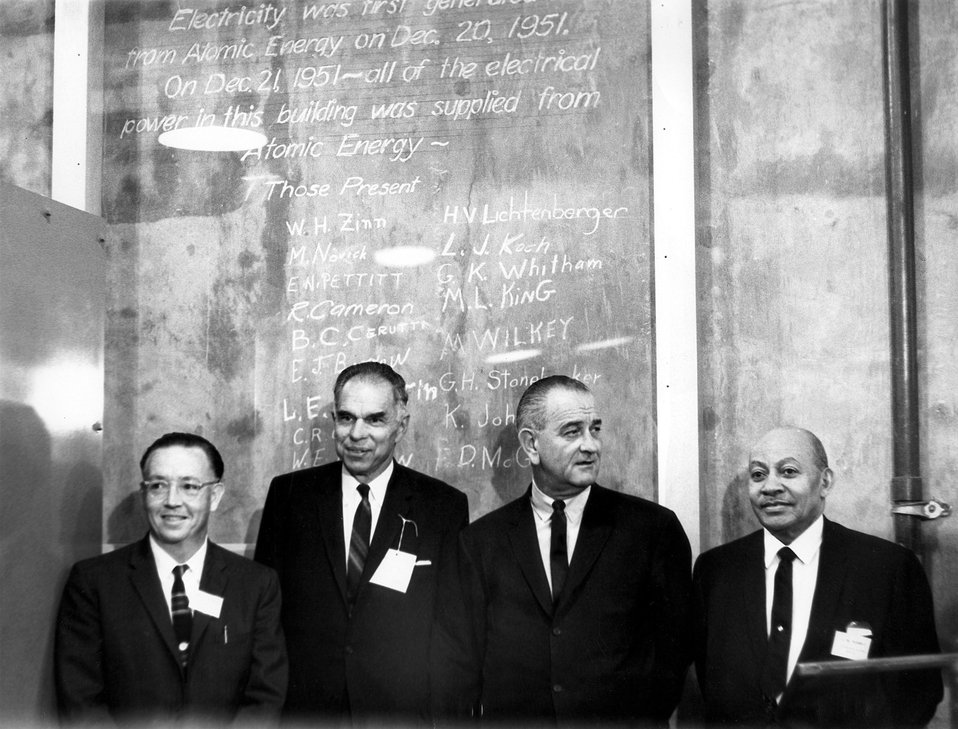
Ramey, Seaborg, President Lyndon B. Johnson and Nabrit, August 26, 1966...